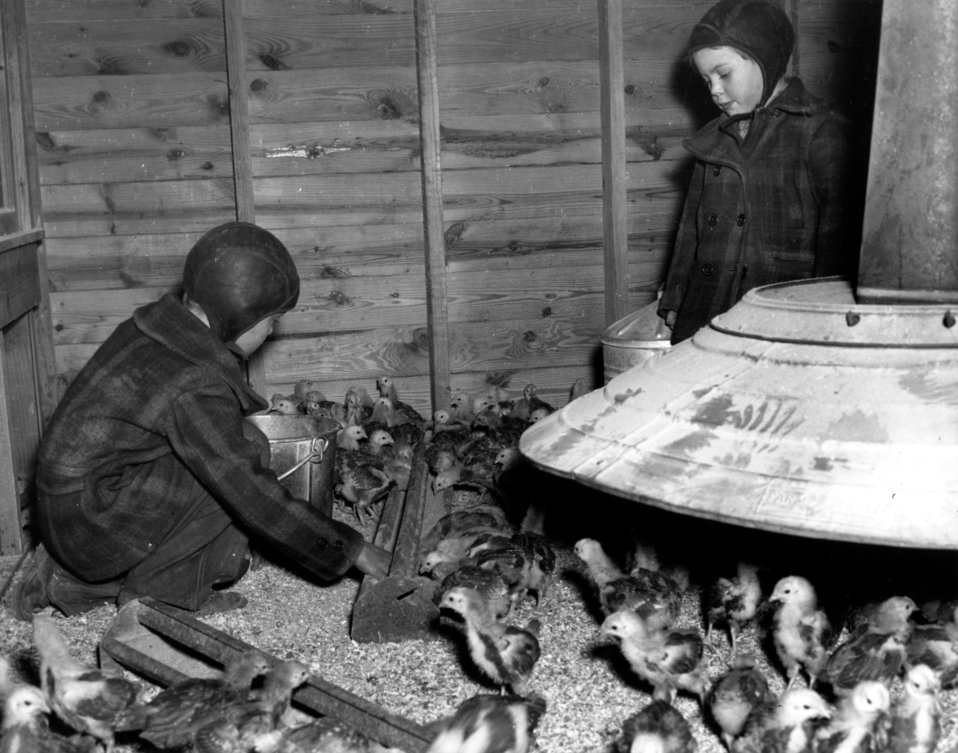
Business activity at Oak Ridge